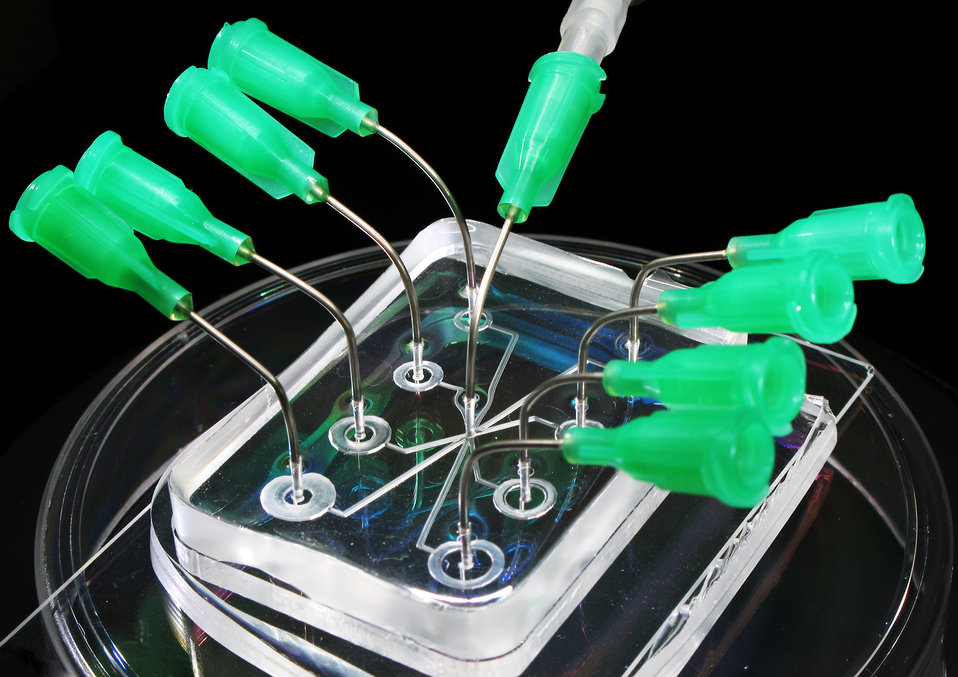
Lab on a Chip

A microfluidic lab on a chip device sitting on a polystyrene dish. Stainless steel needles inserted into the device serve as access points for fluids into small channels within the device, which are about the size of a human hair.